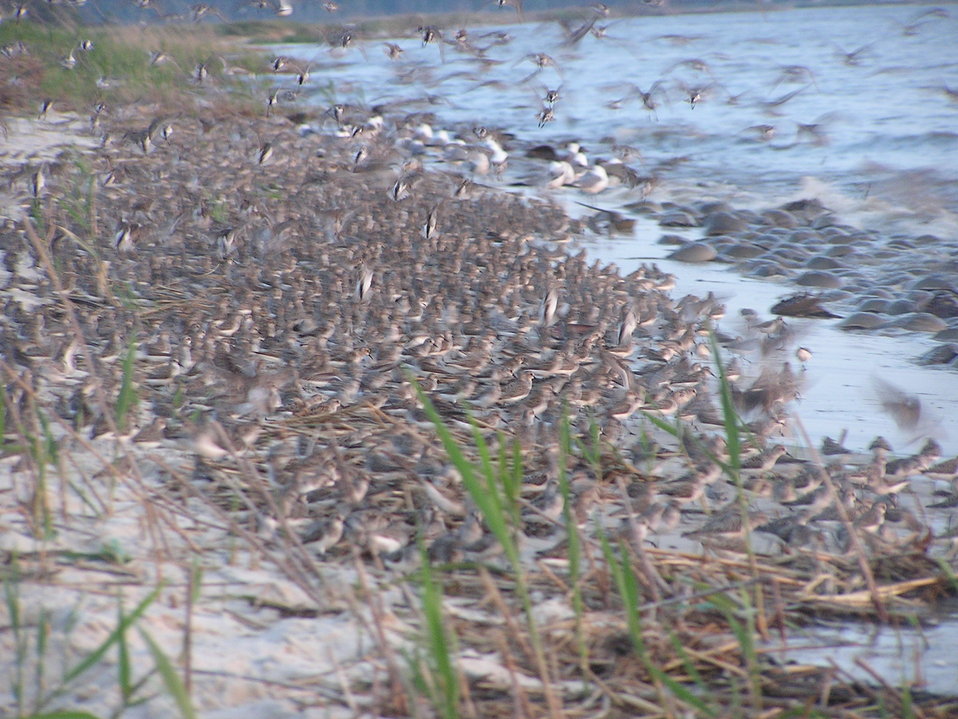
Shorebirds at Cape May National Wildlife Refuge.